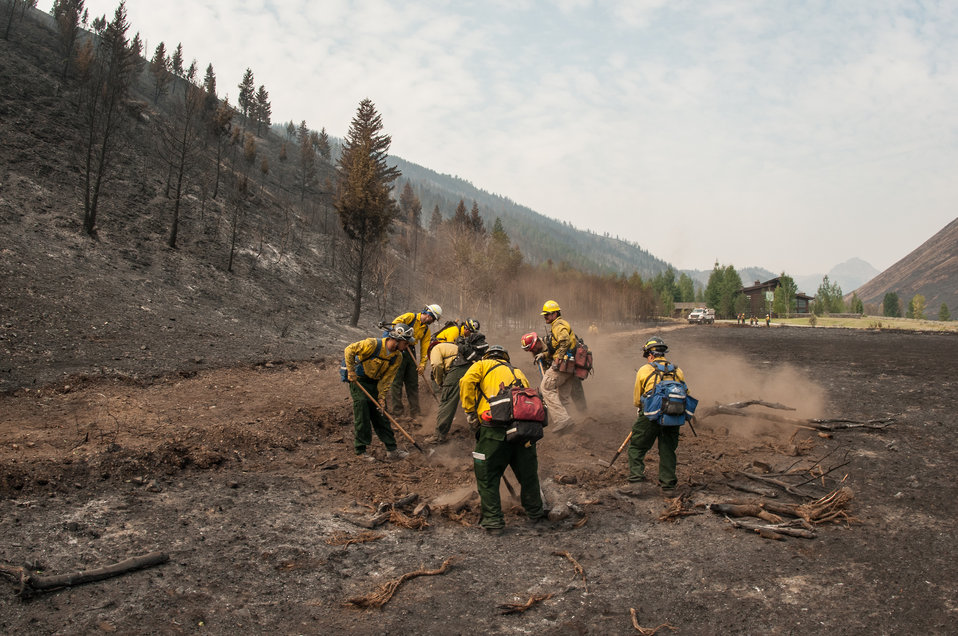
Southern Plains and Comanche Type 2 Initial Attack Crews and an Engine Crew work together to extinguish underground smoldering fires in roots or buried tree limbs, using a variety of hand tools and fire suppressing foam, during the Beaver Creek Fire, west of Hailey, ID, on Wednesday, Aug 21, 2013.